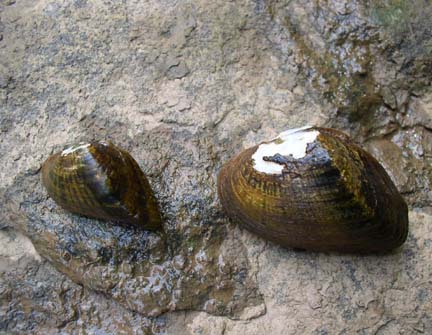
Snuffbox mussel

Snuffbox mussesl which were recently listed as endangered by the U.S. Fish and Wildlife Service.